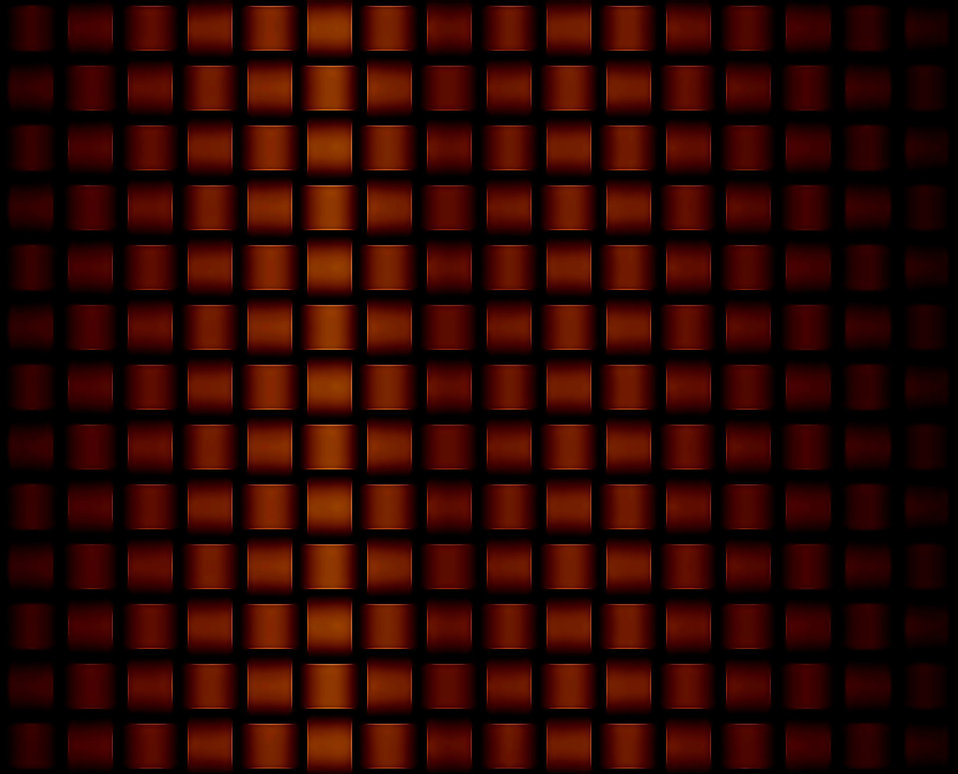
Red basketweave background

Red basketweave.